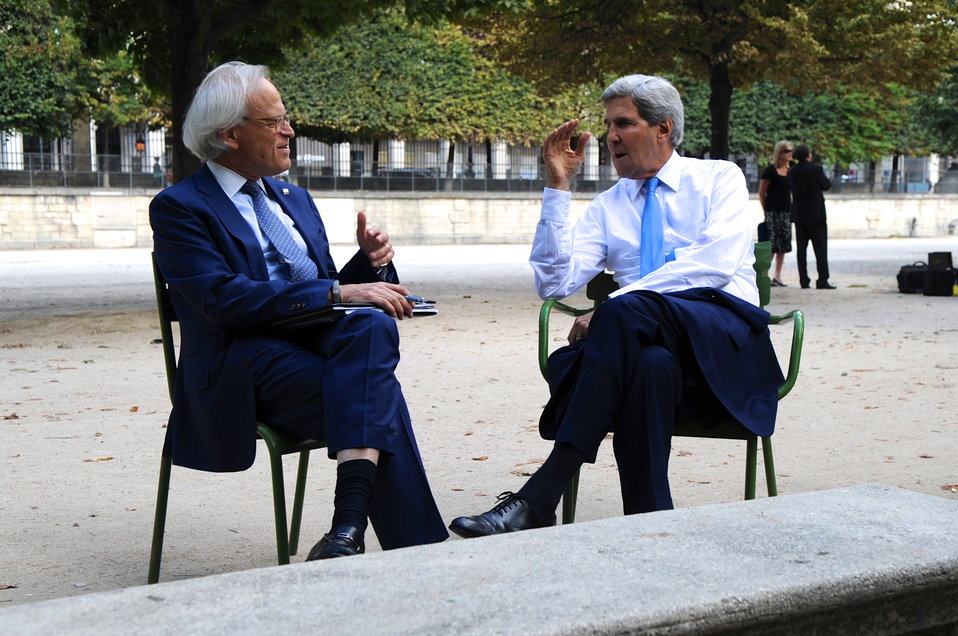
Secretary Kerry Chats With Special Envoy for Israeli-Palestinian Negotiations Indyk

U.S. Secretary of State John Kerry chats with U.S. Special Envoy for Israeli-Palestinian Negotiations Martin Indyk in Tuileries Garden after meetings in Paris, France on September 8, 2013.